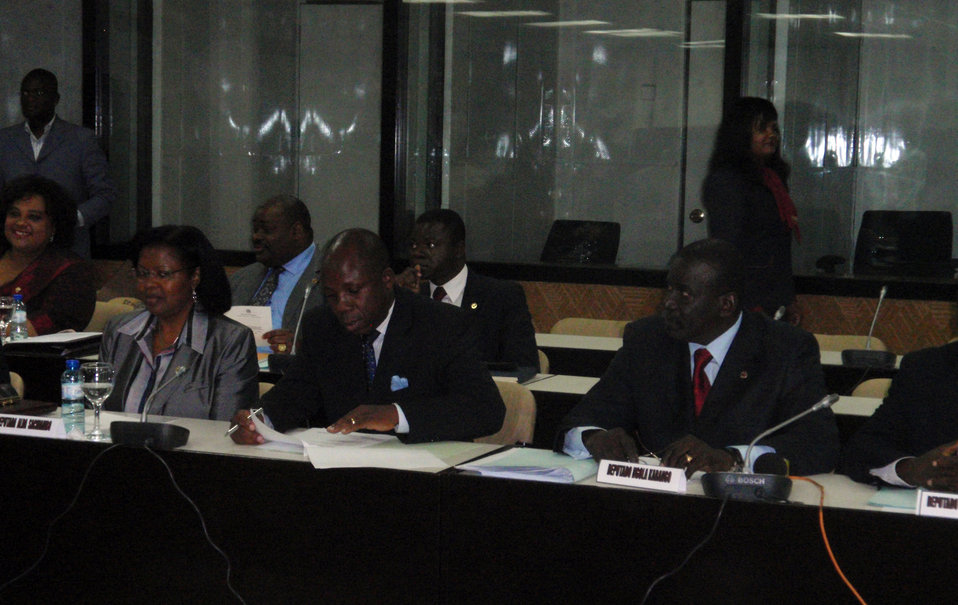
Behind the Scenes: Secretary Clinton Roundtable Meeting With Angolan National Assembly

The Angolan National Assembly prepares prior to a roundtable meeting with U.S. Secretary of State Hillary Rodham Clinton in Luanda, Angola August 10, 2009.